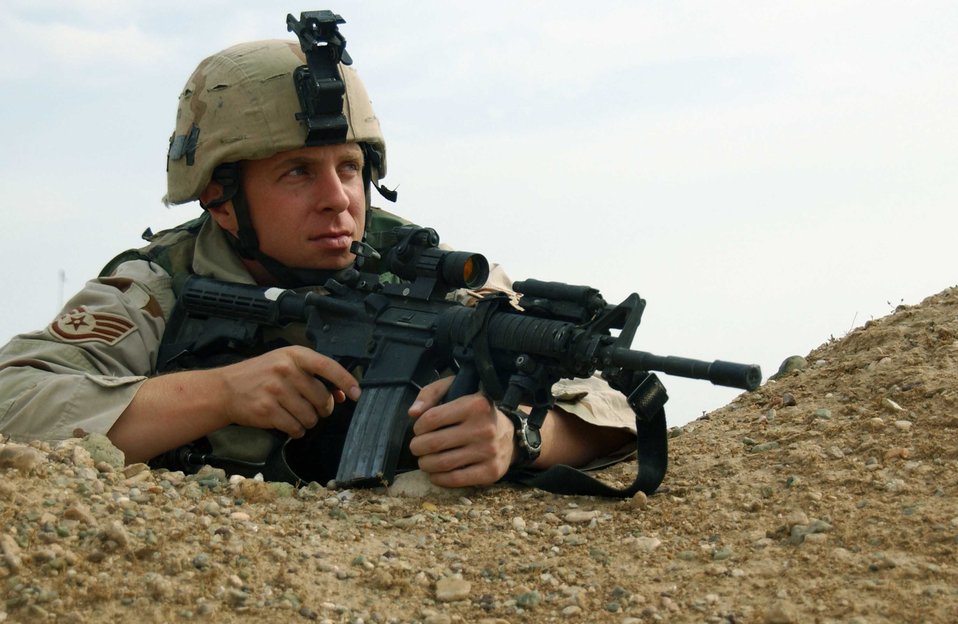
Airmen on patrol

KIRKUK AIR BASE, Iraq -- Staff Sgt. David Howe scans a field for suspicious activity near here Nov. 10. Airmen assigned to the 506th Expeditionary Security Forces Squadron are responsible for securing Air Force assets on Kirkuk Air Base. Sergeant Howe is deployed from the 823rd Security Forces Squadron at Moody Air Force Base, Ga.